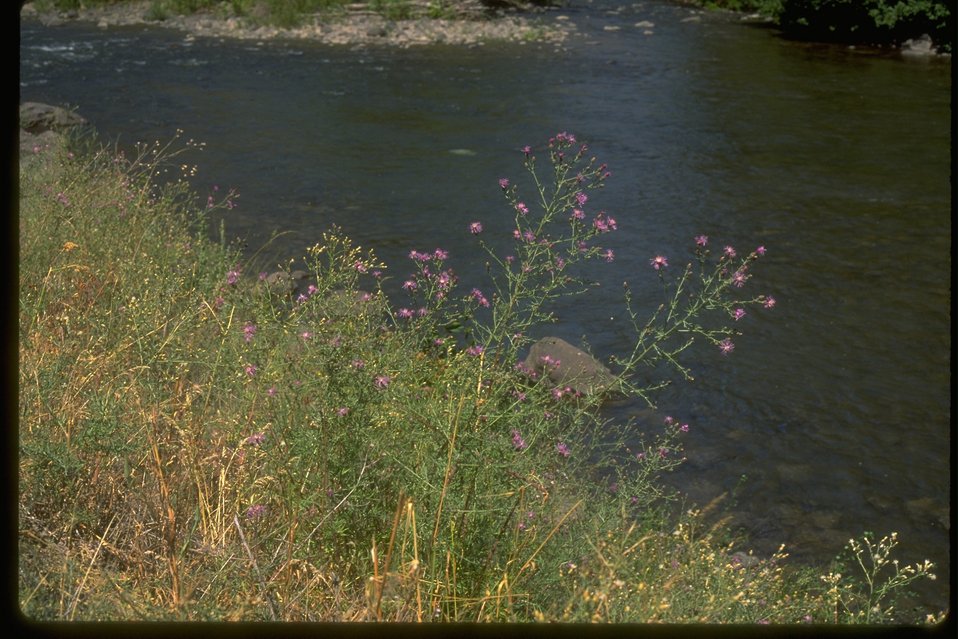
Wenatchee National Forest with its Spotted Knapweed.